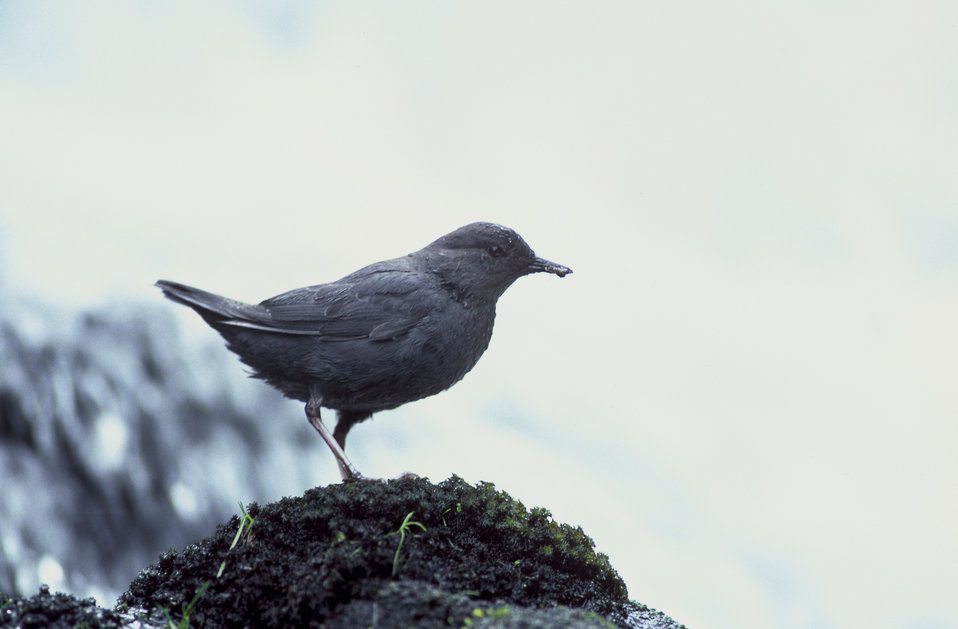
American dipper.